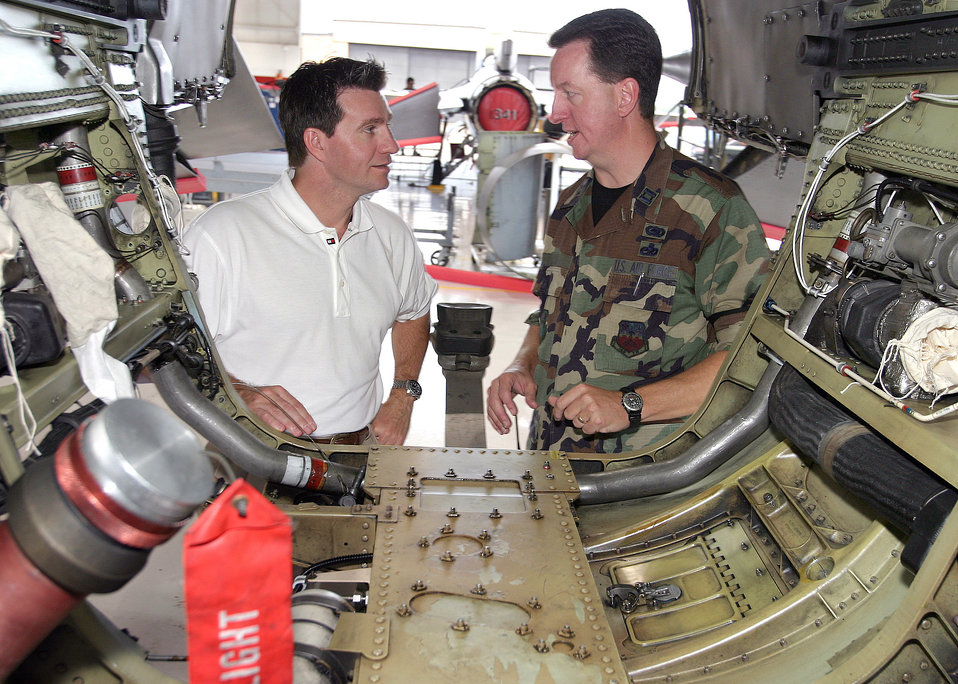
'Song pilot' visits Lackland

LACKLAND AIR FORCE BASE, Texas -- Singer/songwriter Dwayne O'Brien (left) and Capt. Eric Cox discuss the inner workings of an F-16 Fighting Falcon in a hangar here. Mr. O'Brien, a private pilot, toured the base June 8 and entertained about 400 basic trainees and base Airmen during a